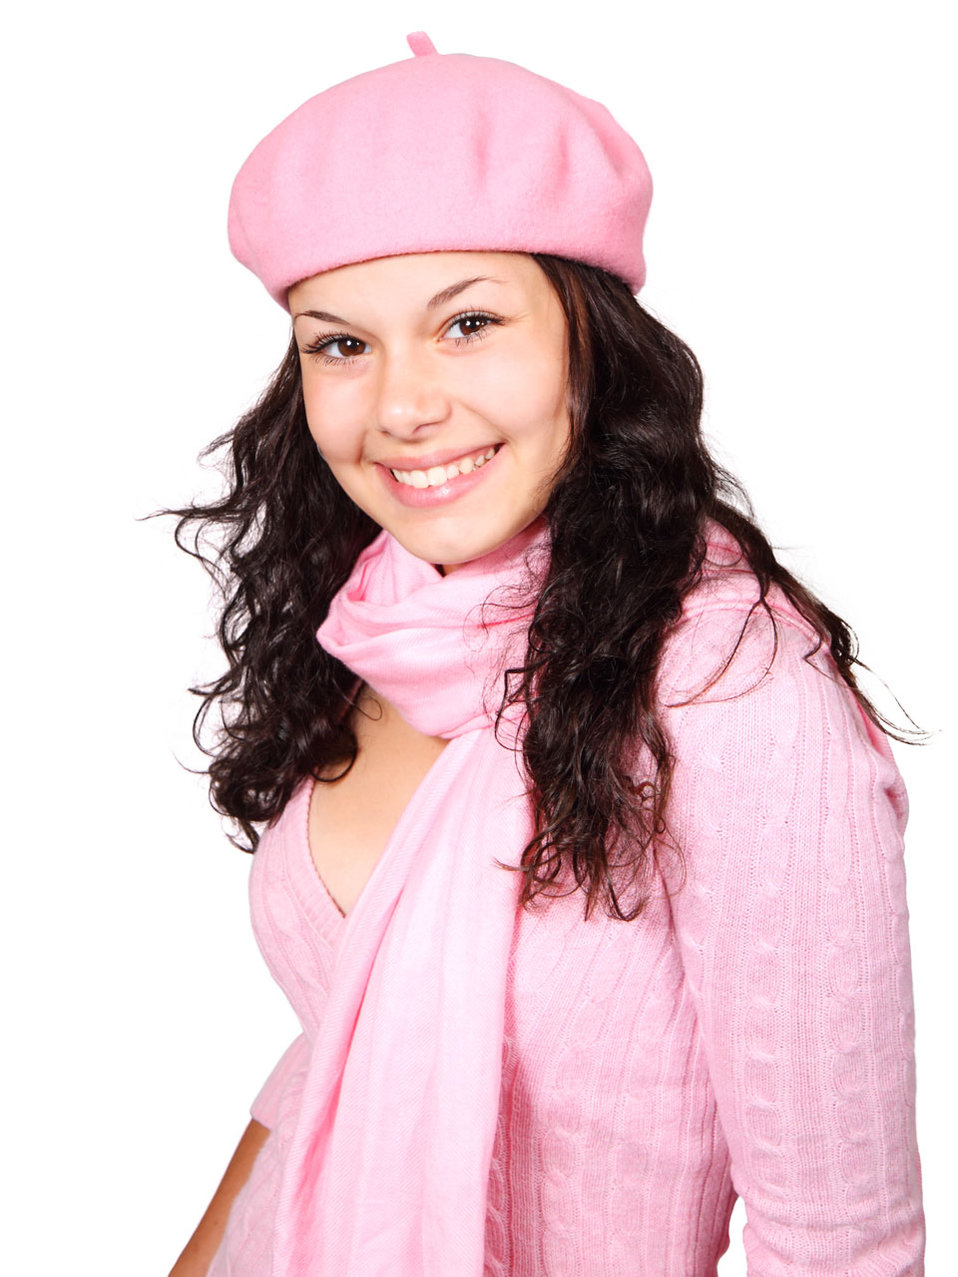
Winter woman in pink

Young woman wearing pink winter clothes isolated on white background.